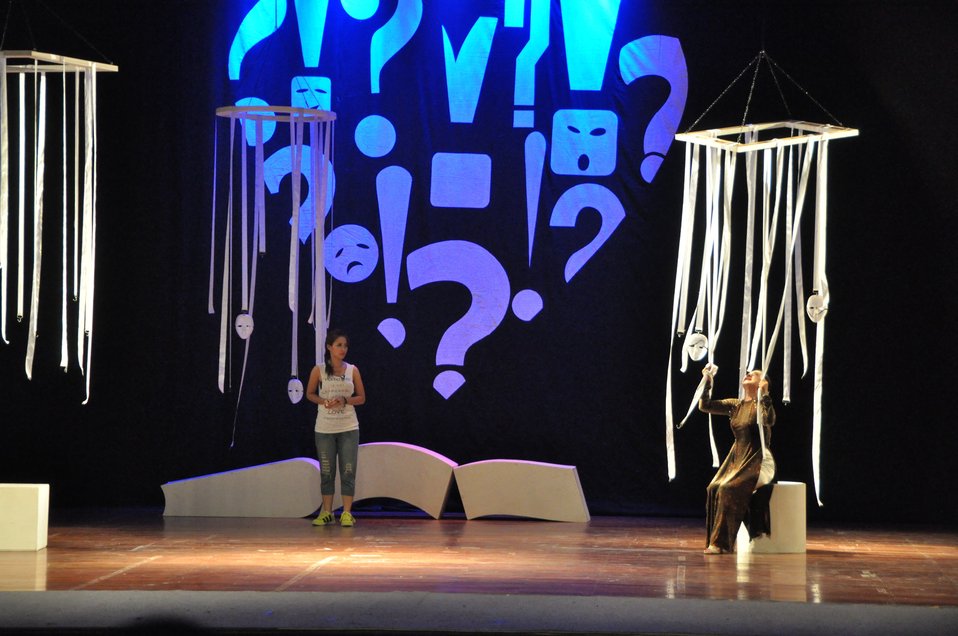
PEPFAR Musical Questions and Exclamations

Hanoi, May 17, 2013